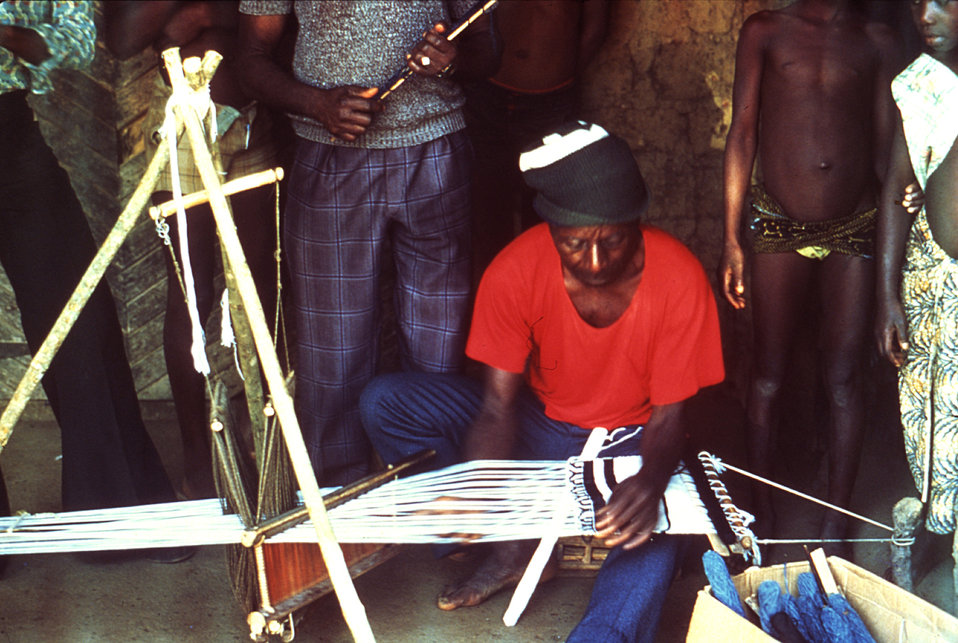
This 1977 image depicts a Motehun, Sierra Leone weaver practicing his craft at a loom as fellow villagers watch.